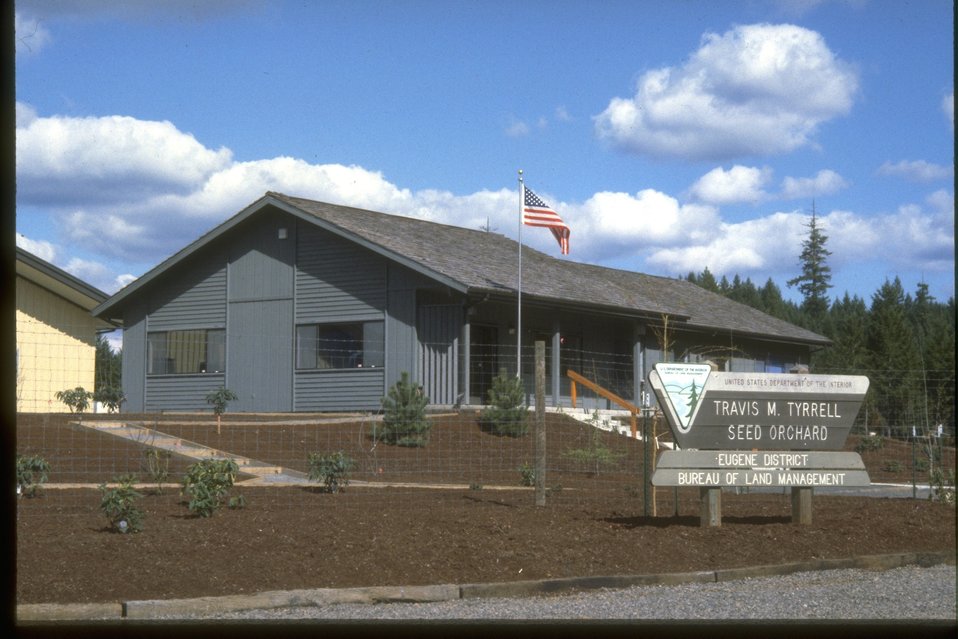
Travis Tyrrell Seed Orchard